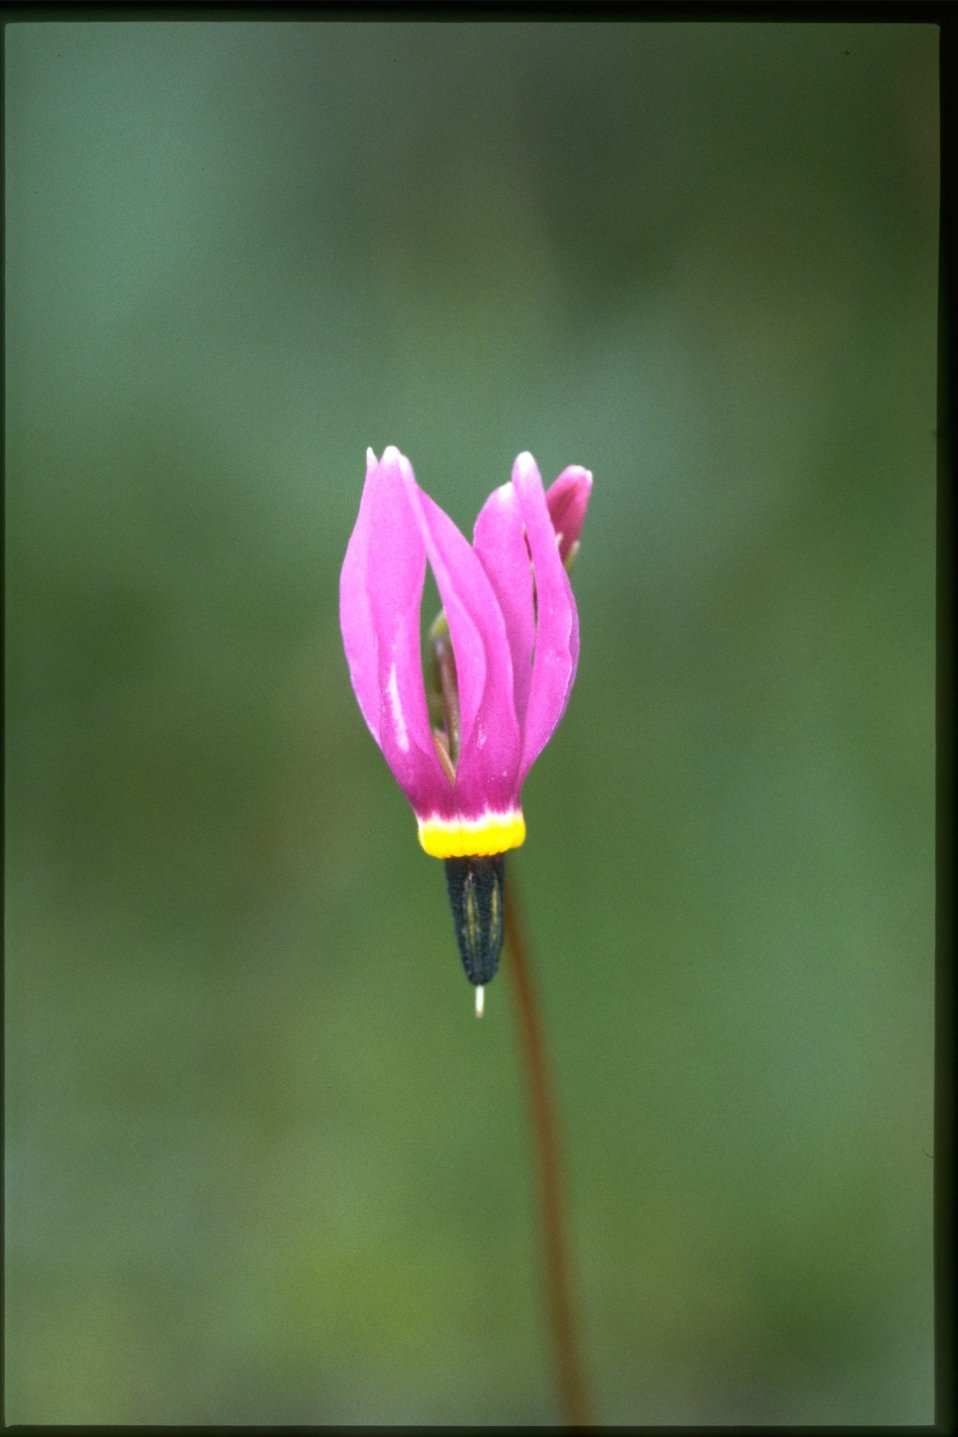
Closeup shot of Dark-Throat Shooting Star, Dodecatheon Pulchellum wildflower.